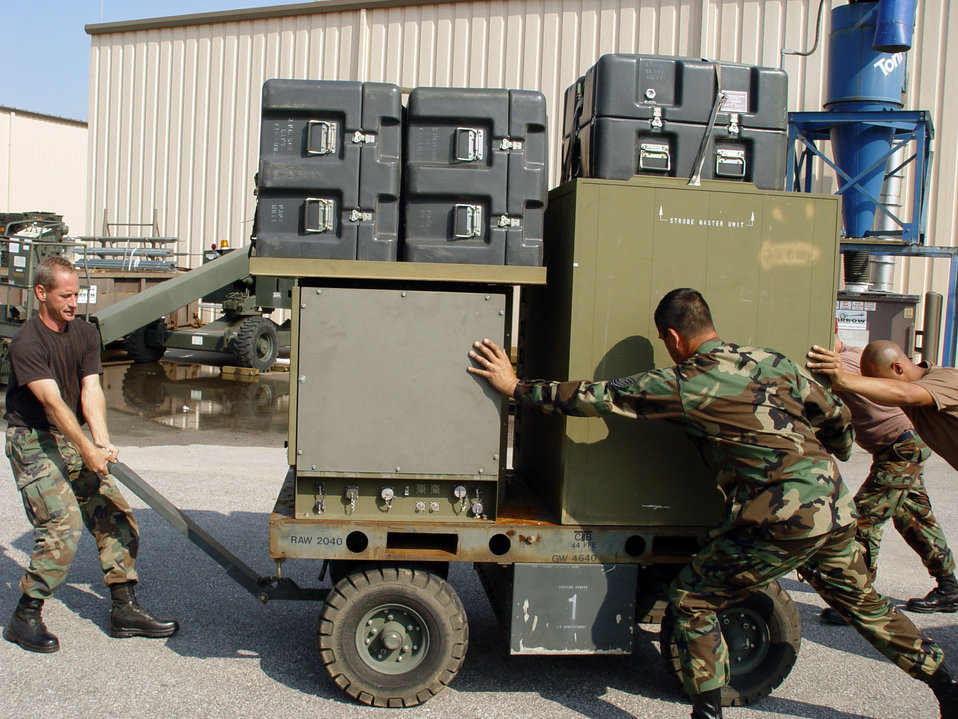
Hurlburt Field combat engineers rush to aid of Keesler Airmen

HURLBURT FIELD, Fla. -- Airmen with the 823rd Red Horse Squadron prepare an emergency airfield lighting system for deployment to Keesler Air Force Base, Miss. Teams of combat engineers have mobilized since Aug. 30 to support rescue and relief operations, debris removal and damage assessments at some of the worst-hit areas.